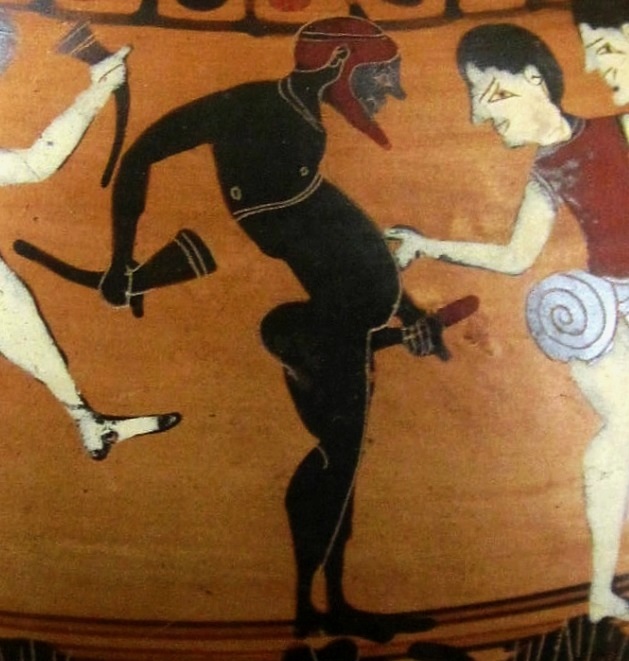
Attica Komos procession (detail)